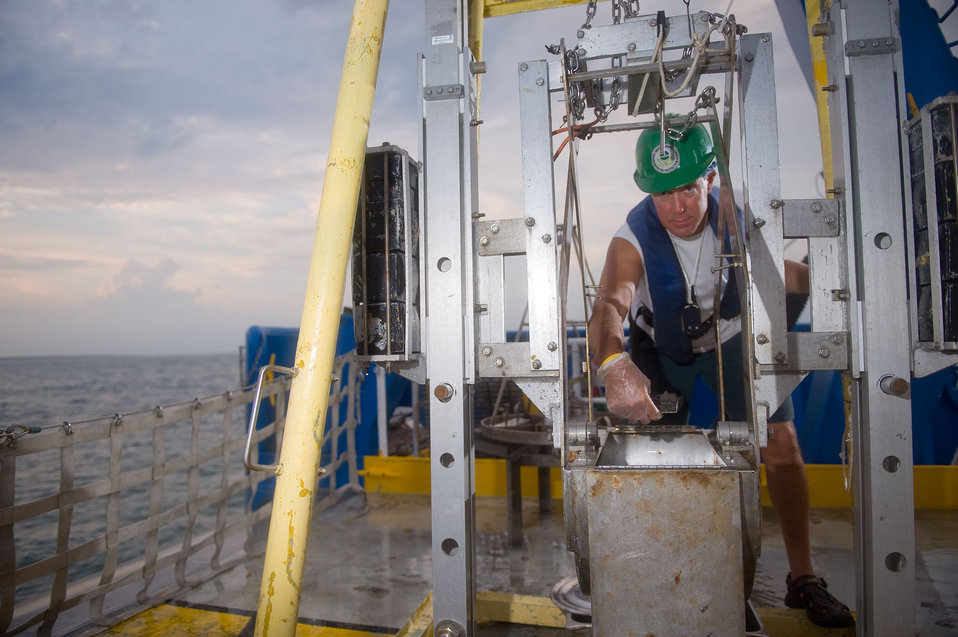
August 2010, Collecting sediment

Steve Donohue, EPA Region 3, collects top two centimeters of sediment for analysis of benthic content.